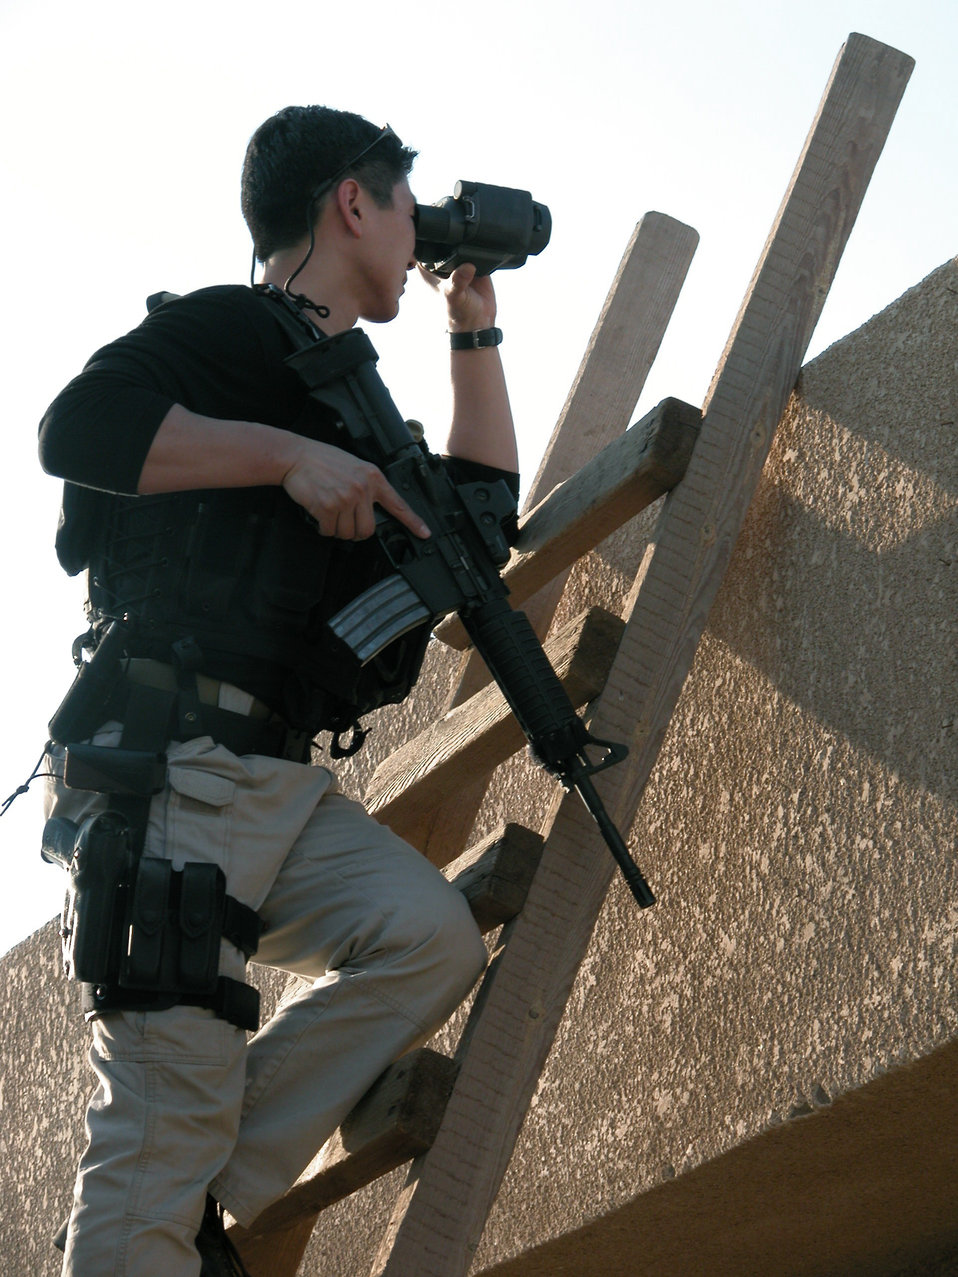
OSI keeps Baghdad Airmen, Soldiers safe

BAGHDAD, Iraq -- A special agent assigned to the Office of Special Investigations Detachment 2408 conducts a counter-surveillance mission near an entry control point here. OSI agents protect Airmen and Soldiers deployed to Baghdad International Airport from many force-protection threats.